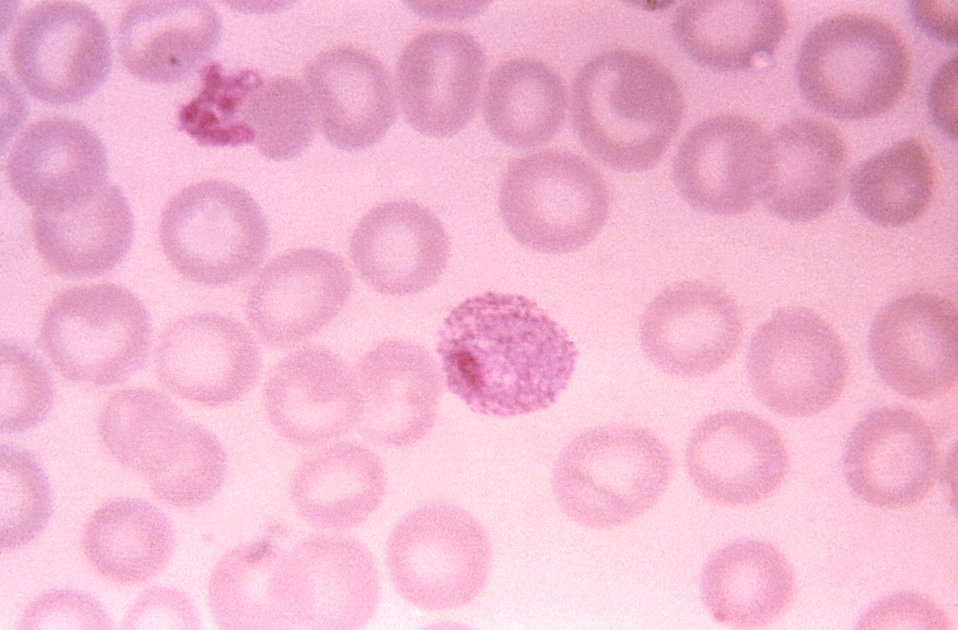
This thin film Giemsa stained micrograph depicts a mature Plasmodium vivax trophozoite.